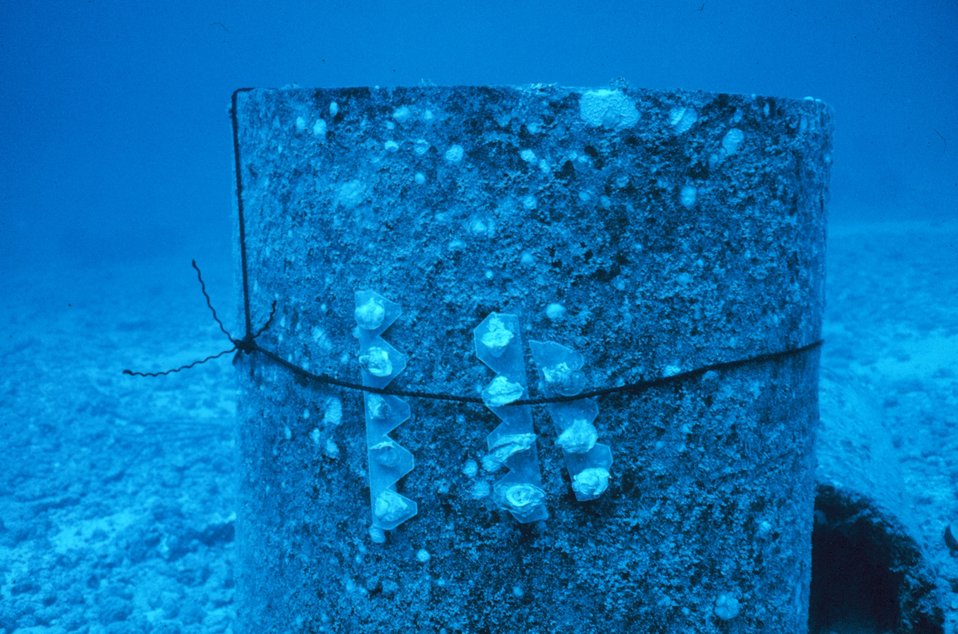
Experiment to determine growth rates of oysters, Crassostrea virginica, under high salinity, oceanic conditions.